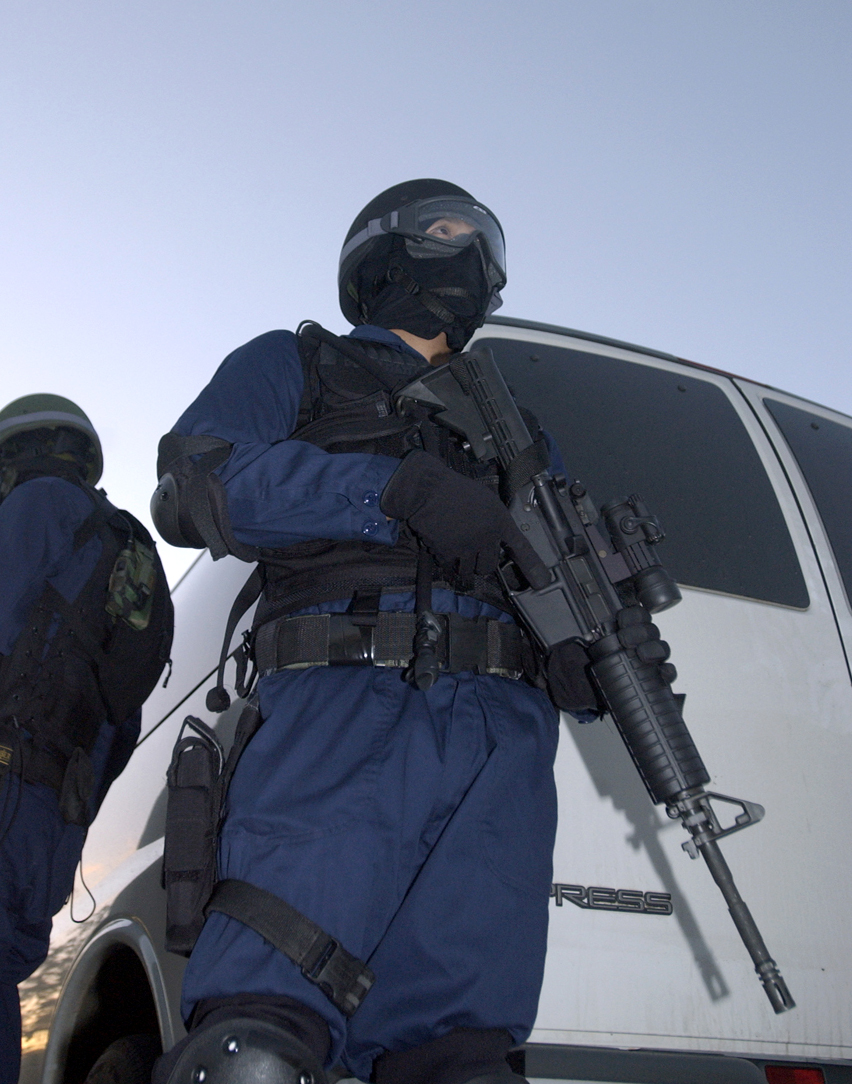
Hostage negotiation exercise

A member of 36th Security Forces Squadron's High Intensity Tactical Team stands guard outside an elementary school during a hostage negotiation exercise, Wednesday, Feb. 22, 2006, at Anderson Air Force Base, Guam.